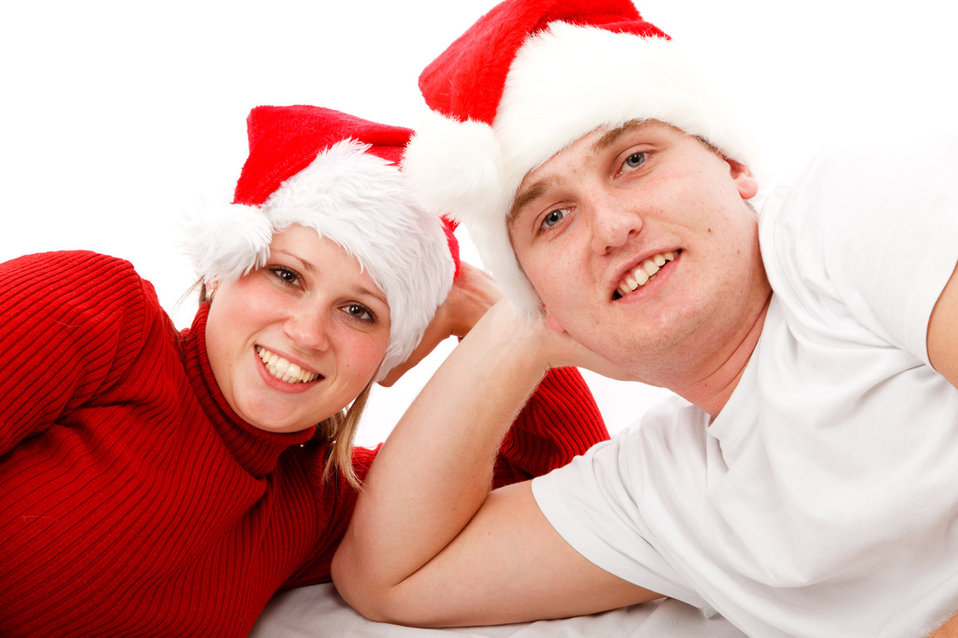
Couple in santa hats

Young couple wearing santa hats on white background.